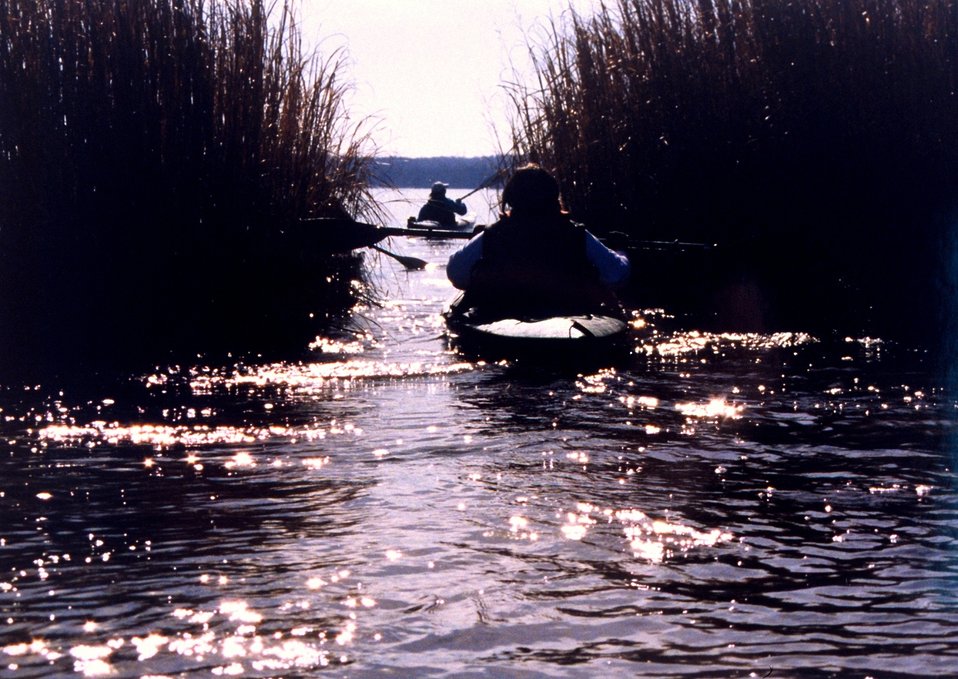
Paddling through the Patuxent marshes on a bright winter's day. Sun glint sparkles on the water.